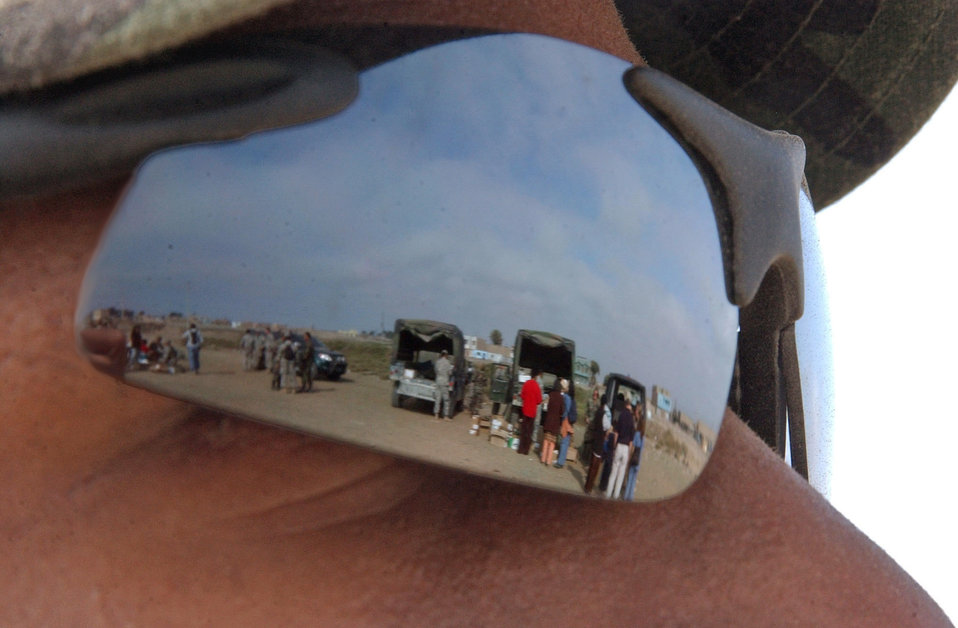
Servicemembers treats 1,300 patients in Peru

Staff Sgt. Issac Kirkwood surveys site of the Joint Task Force-Bravo medical humanitarian relief site Aug. 20 in Pisco, Peru. Sergeant Kirkwood is one of seven Task Force-Bravo joint security forces members to deploy with the team from Soto Cano Air Base, Honduras, providing security at medical care sites. The medical team deployed here Aug. 17 following the 8.0 magnitude earthquake that struck the region Aug. 15.